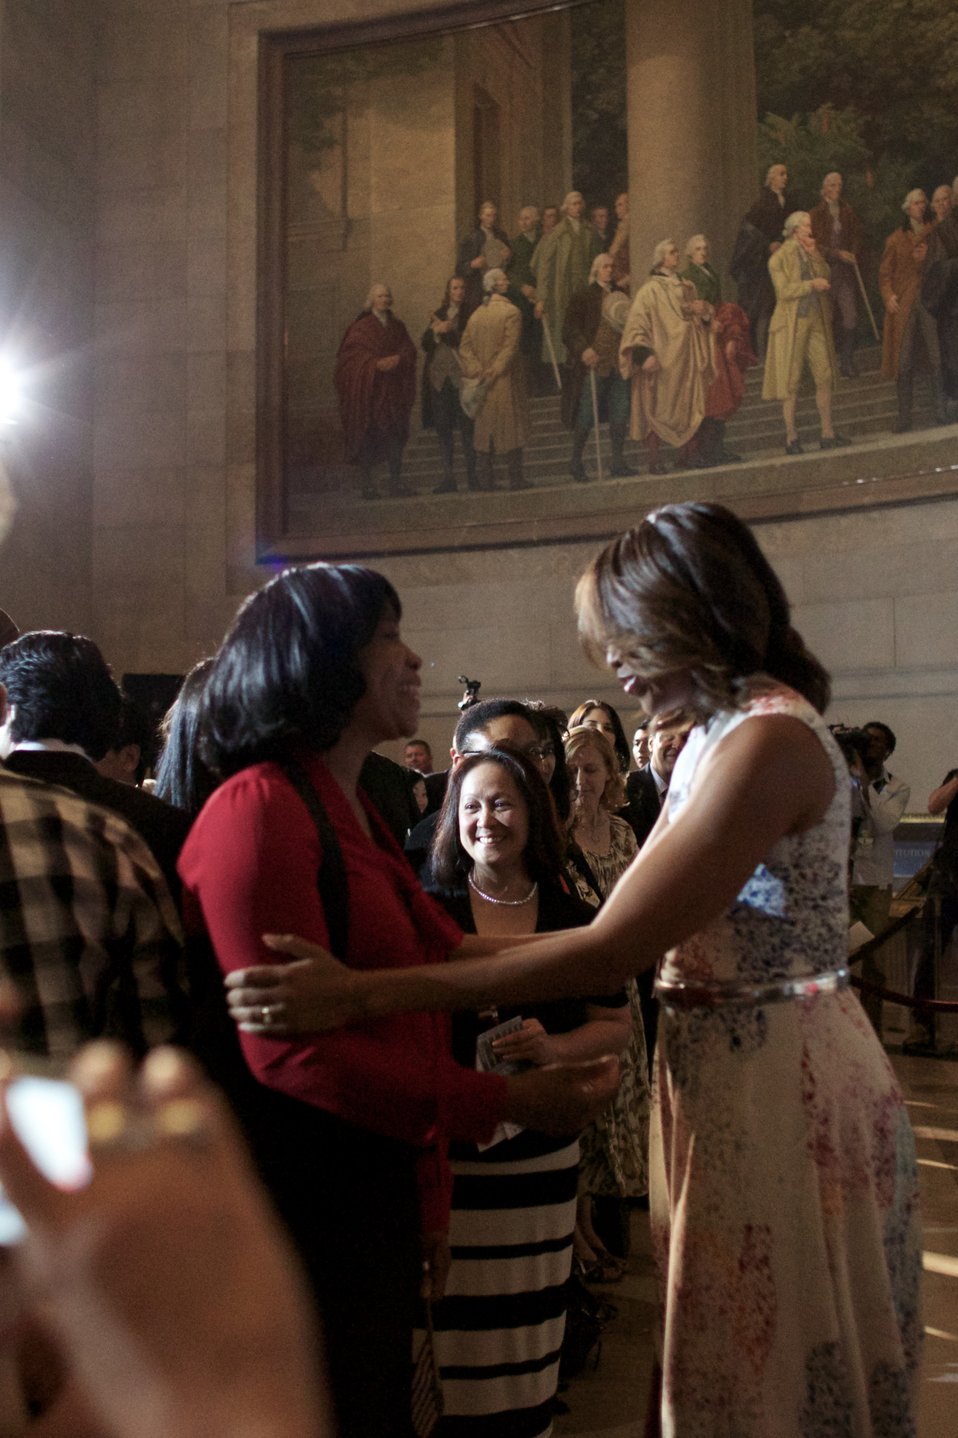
Naturalization Ceremony with Michelle Obama